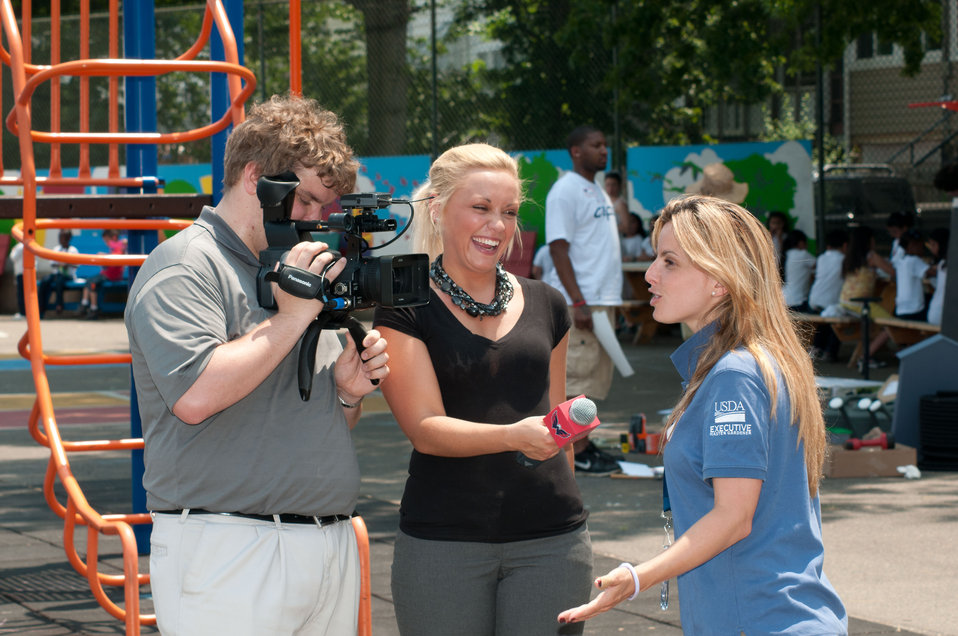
U.S. Department of Agriculture Outreach and Education Coordinator Annie Ceccarini is interviewed by a Washington Capitals’ news media team during the creation of the People’s Garden, at William B. Powell Elementary School on Thursday, June 9, 2011 in Washington, DC. Volunteers from U.S. Department of Agriculture People’s Garden Executive Master Gardener program and Washington Capitals hockey organization, along with defenseman Jeff Schultz, and mascot Slapshot transformed a grassy corner of the school playground into a habitat garden and outdoor learning area. Executive Master Gardeners led the volunteer project teams. The Washington Capitals donated new tools; tool shed; garden materials; lunch; most of the volunteers and more. The completed projects included a walking path; tiling of garden plots; planting a bird habitat garden, pollinator garden and native grasses; caterpillar and butterfly plaques; hummingbird and bat house, and tool shed. The garden will later include a picnic area, outdoor classroom, hummingbird garden, Monarch watch garden, native bee garden, and birdbath. USDA challenges its employees to establish People's Gardens at USDA facilities worldwide or on this case, help communities create gardens. People's Gardens vary in size and type, but all have a common purpose - to help the community and the environment.